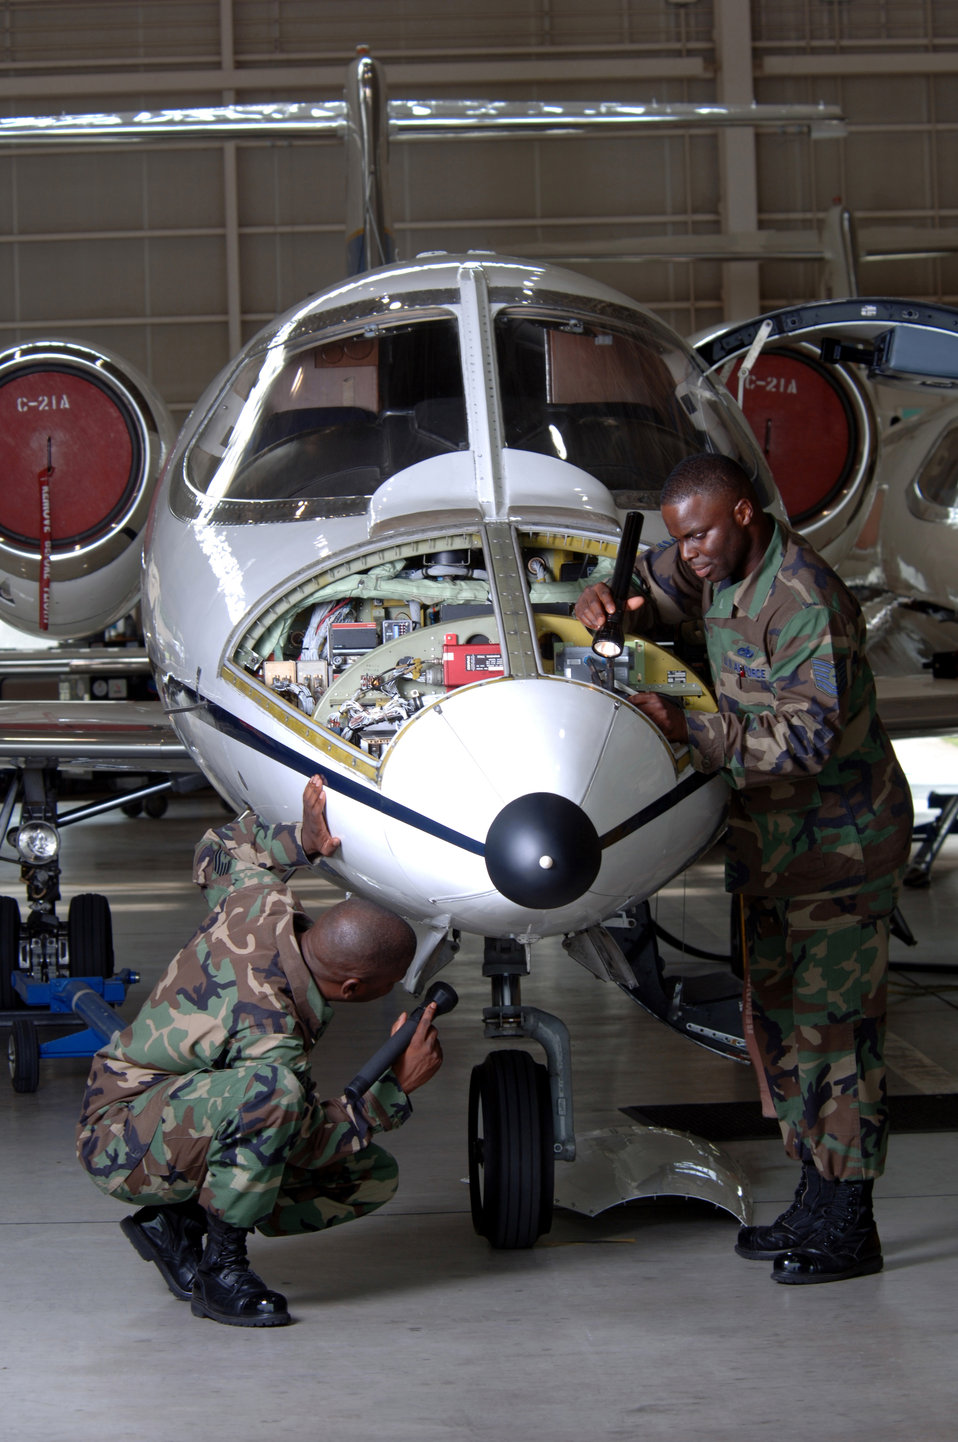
Quality check

YOKOTA AIR BASE, Japan -- Tech. Sgts. Eric Wilson (left) and Philip Pettaway check the nose gear on a C-21 aircraft during a quality assurance inspection. The Airmen are assigned to the 374th Maintenance Operations Squadron.